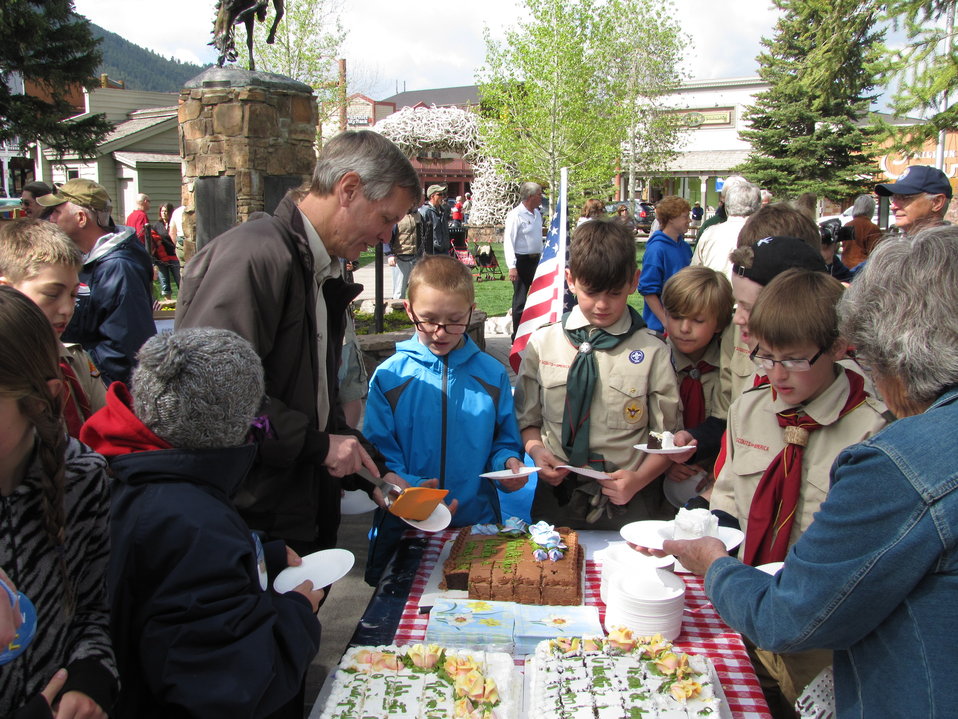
The First Piece of Cake

The National Elk Refuge's centennial was highlighted at the 45th annual Boy Scout antler auction on Saturday, May 19, 2012. Refuge Manager Steve Kallin served the first piece of birthday cake to a group of anxiously-awaiting scouts in the center of Jackson's Town Square. The cakes were provided by Wilson (Wyoming) Cub Scout Pack 40.